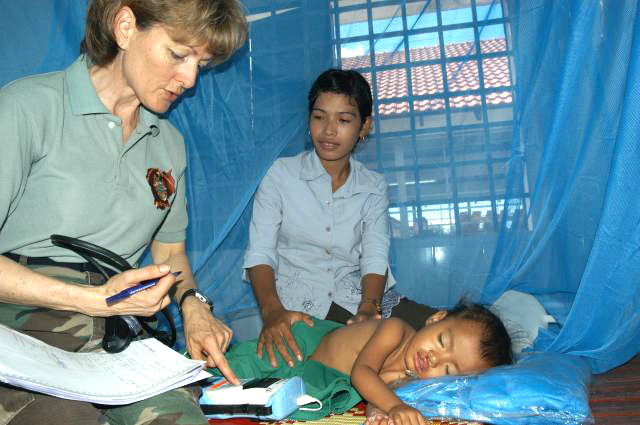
Care in Cambodia

KEP, Cambodia -- Capt. Alice Quiroz uses a machine to monitor a Cambodian girl's pulse in the post-operation recovery unit at a hospital compound here May 18 after the child received surgery to fix a cleft lip. Captain Quiroz is part of a 20-member blast resuscitation and victim assistance mission team that arrived here for a two-week humanitarian mission. She is a critical-care nurse with the 349th Medical Group at Travis Air Force Base, Calif.